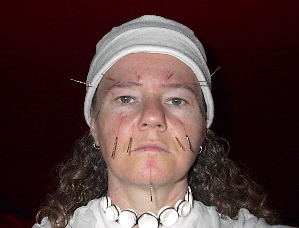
I took this photo. It is a self-portrait for my user page, and useful for the Acupuncture page.